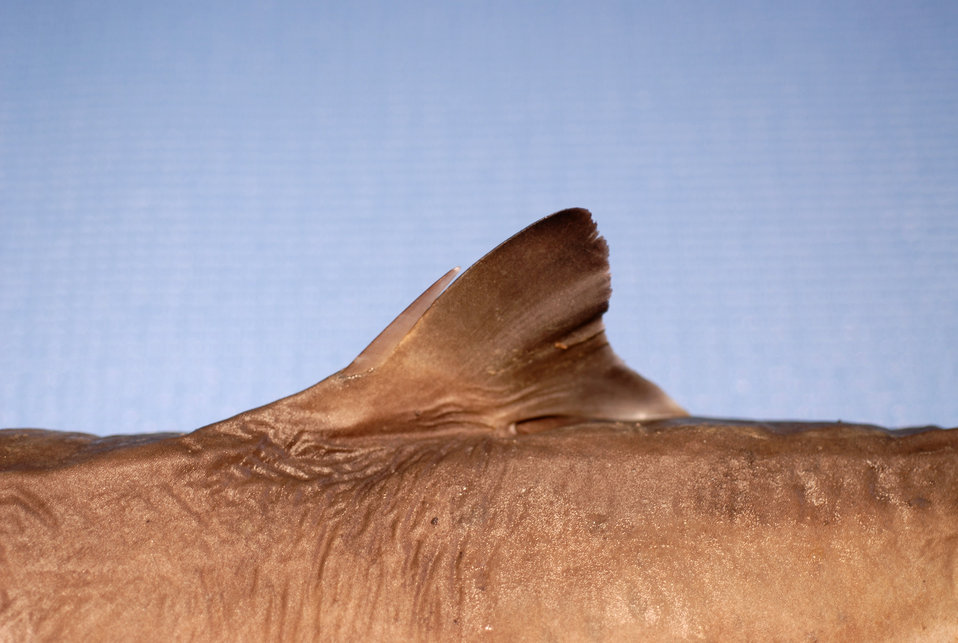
First dorsal fin of sortspine dogfish or shortspine spurdog ( Squalus mitsukurii )